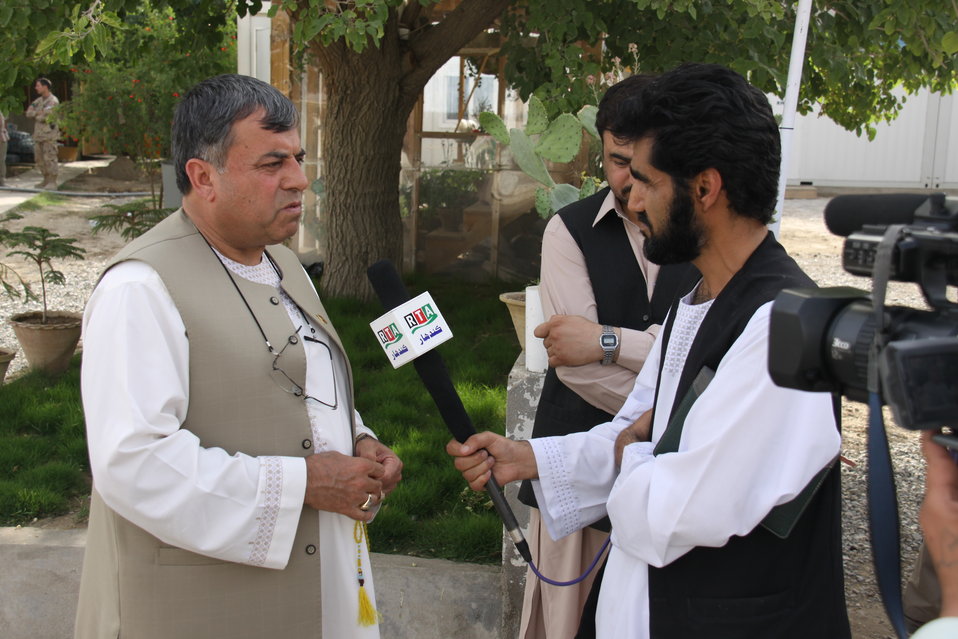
Meeting with Local Leaders in Kandahar